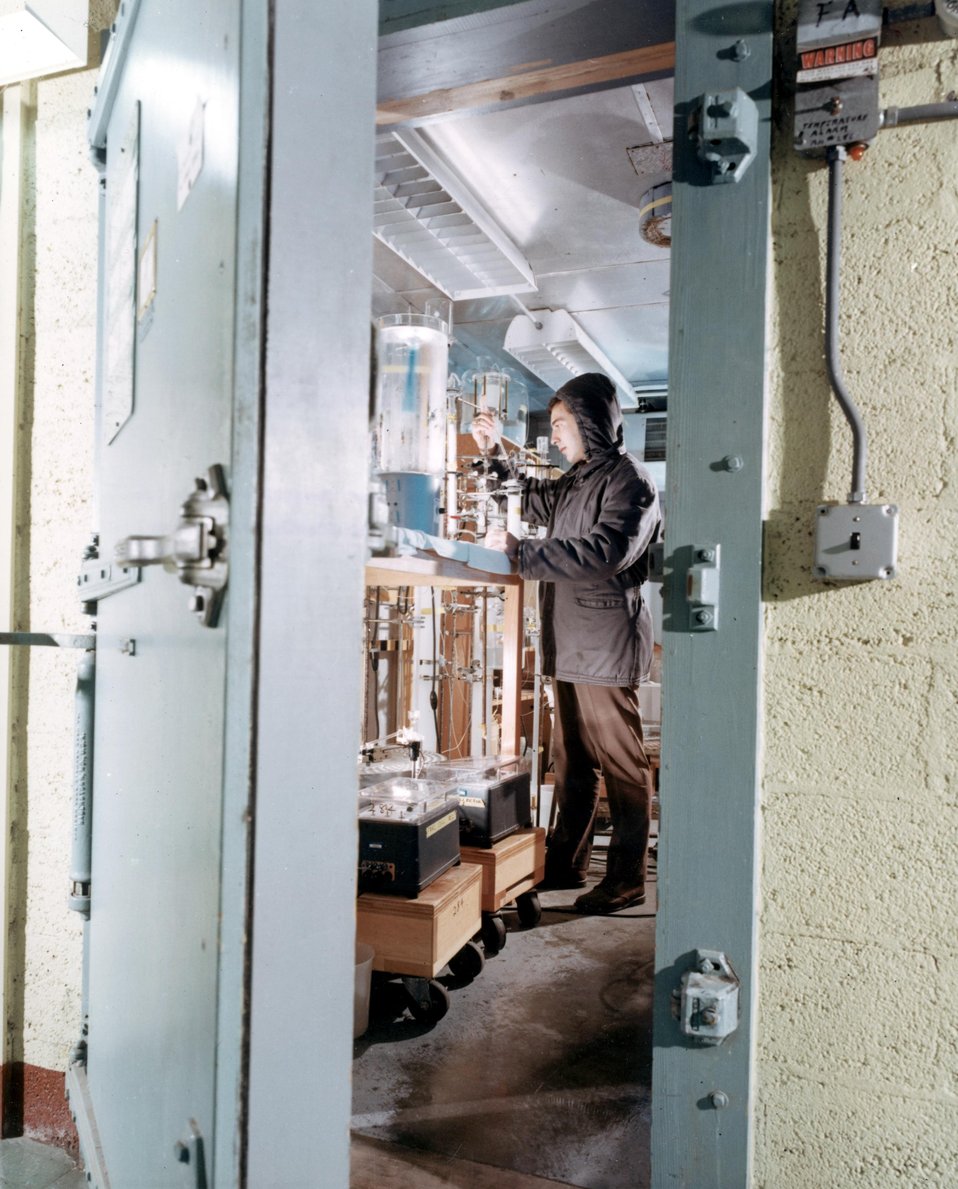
Chromatographic separation of heat sensitive digestive enzymes from pancreatic juices. c. 1966